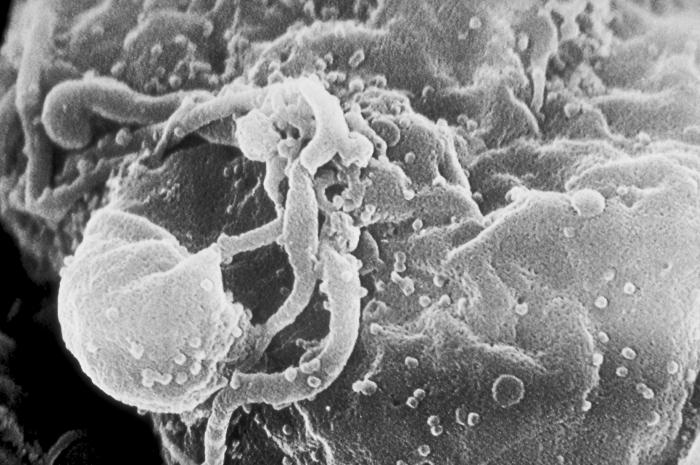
Scanning electron micrograph of HIV-1 virions budding from a cultured lymphocyte. See PHIL 10000 for a colorized view of this image, and PHIL 14270, for a black and white version, both viewed at a lower magnigication.